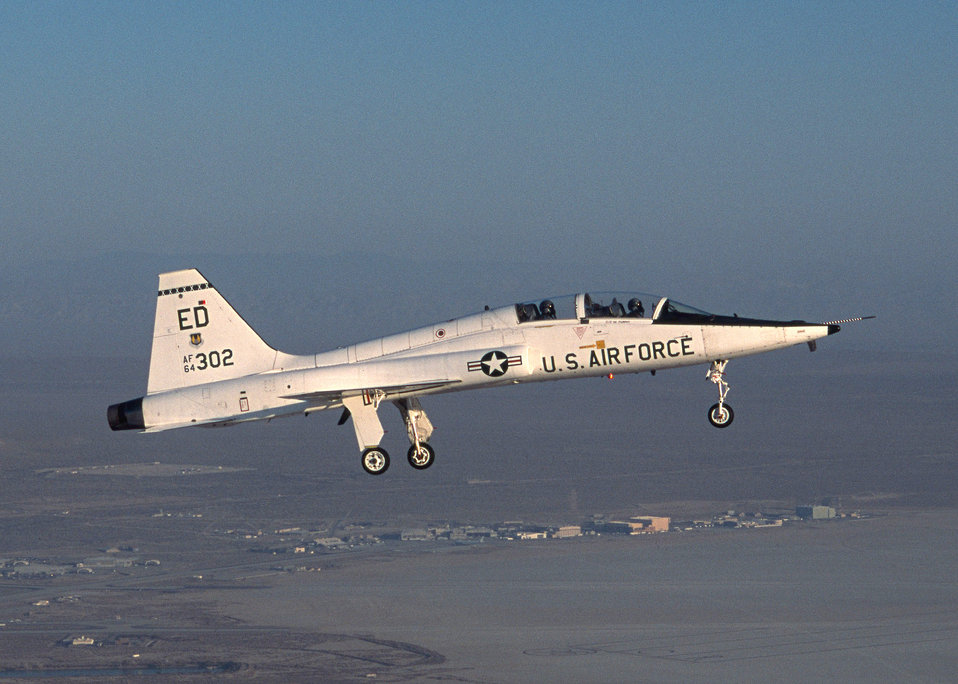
Upgrades retrofit T-38 with latest technology

EDWARDS AIR FORCE BASE, Calif. -- A T-38 Talon soars after taking off from the main runway here. Airmen from the 416th Flight Test Squadron wrapped up flight tests on software upgrades in an ongoing avionics upgrade program recently.